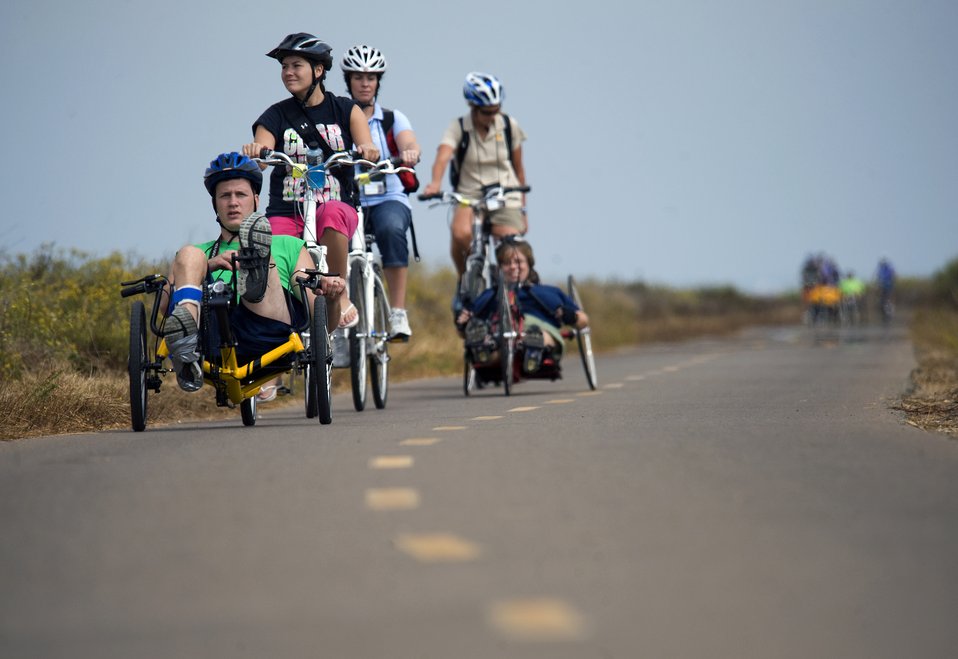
Disabled veterans sports clinic begins in San Diego

Disabled veterans from all branches of service take part in a cycling race along Silver Strand State Beach during the opening day of events for the 2010 National Veterans Summer Sports Clinic Sept. 20, 2010, San Diego, Calif. Participation is open to U.S. military service veterans with orthopedic amputations, traumatic brain injuries, burn injuries, psychological trauma, certain neurological conditions, visual impairment, spinal cord injuries and other recently incurred disabilities.